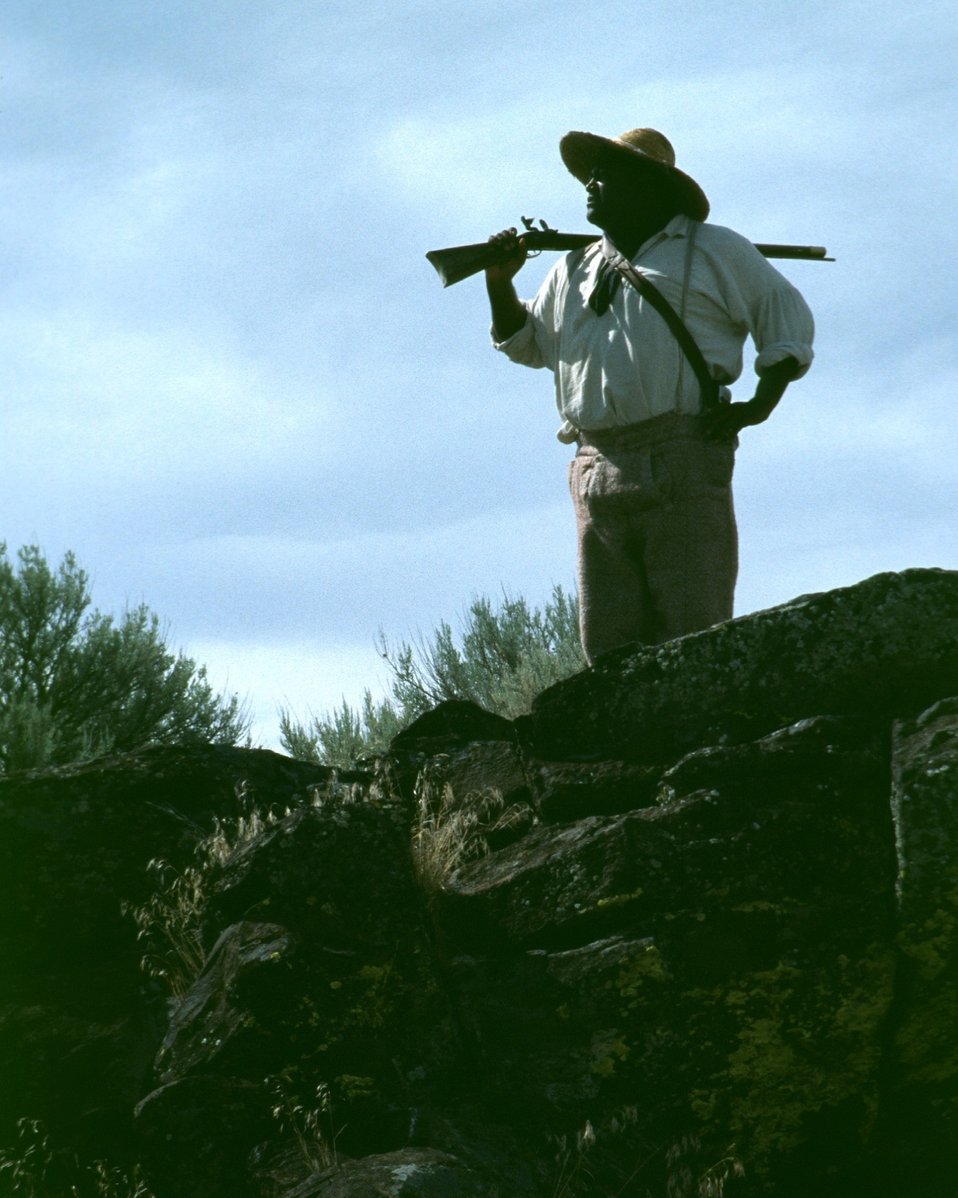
Dylan Prichertt portrays a black pioneer scout.